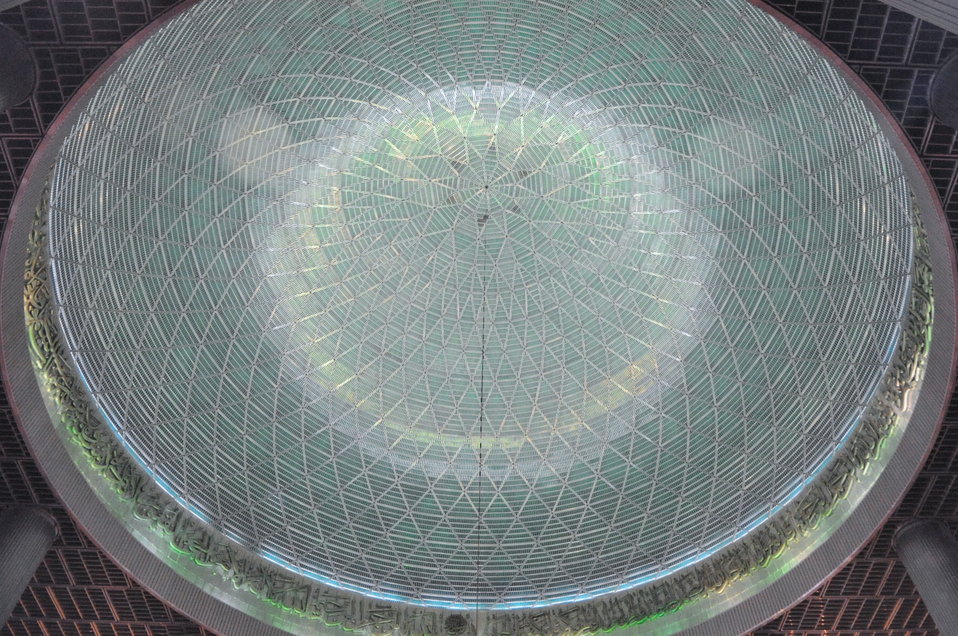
Roof of Grand Domed Prayer Hall in Istiqlal Mosque

The roof of the grand domed prayer hall in the Istiqlal Mosque in Jakarta, Indonesia, the largest in Southeast Asia, as seen during a visit by U.S. Secretary of State John Kerry on February 15, 2014.